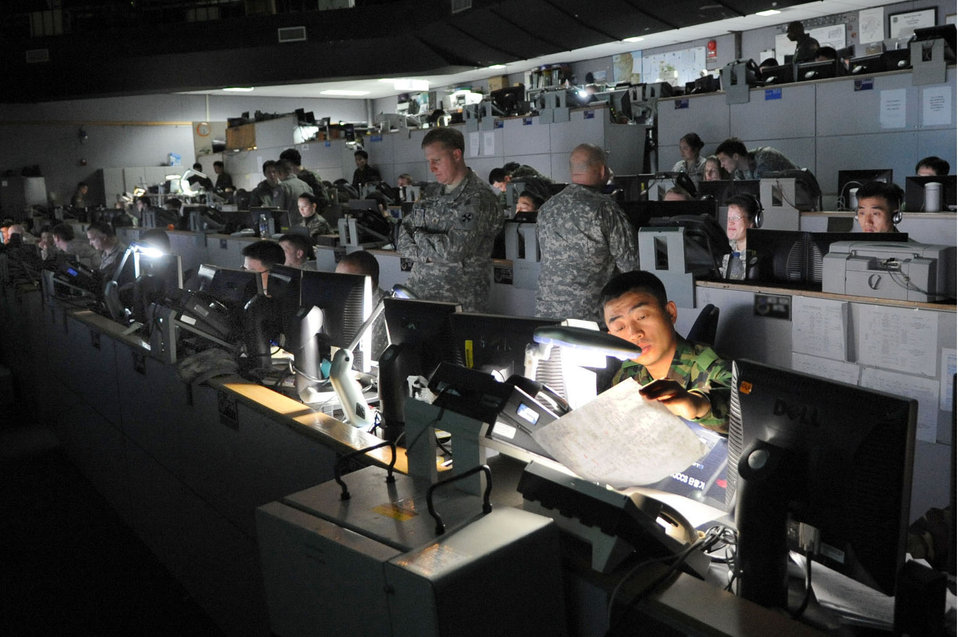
Exercise Ulchi Freedom Guardian

American and Korean servicemembers conduct operations at the Korea Air Operations Center at Osan Air Base, South Korea, during an exercise earlier this year. More than 27,000 American and 500,000 South Korean servicemembers currently are participating in Exercise Ulchi Freedom Guardian which runs from Aug. 16 to Aug. 26, 2010. This year marks the 34th anniversary of the joint/combined exercise.